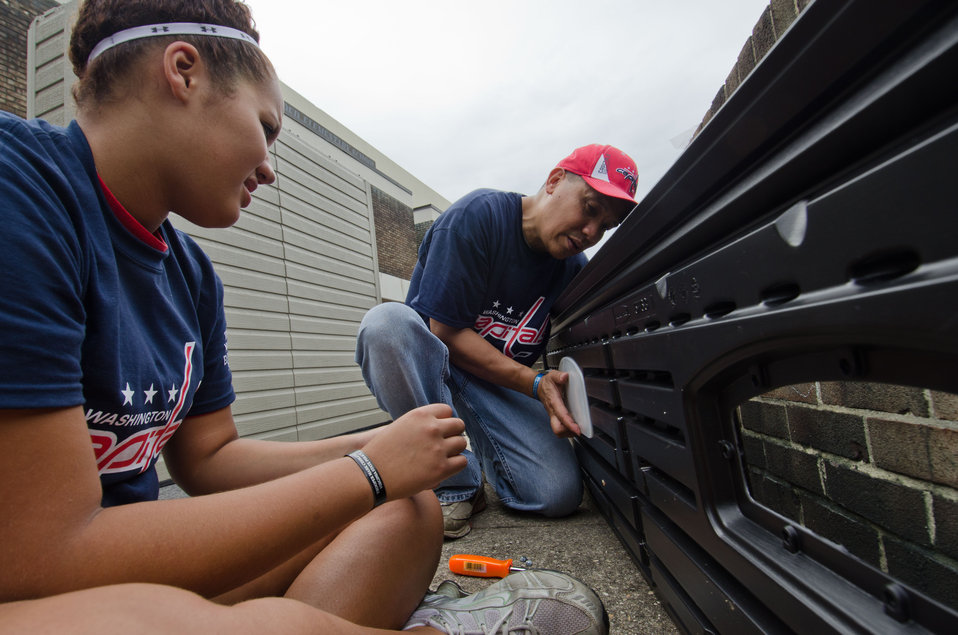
Descendants of U.S. Supreme Court Justice Thurgood Marshall, son, John Marshall and his grand-daughter Brianna attach window panels to a skylight section of a prefabricated garden toolshed, when the U.S. Department of Agriculture (USDA) People’s Garden Executive Master Gardeners, friends, and family, along with Washington Capitals fans volunteer in District of Columbia Public Schools’ (DCPS) Beautification Day, on Saturday, August 25, 2012, at Thurgood Marshall Elementary School, in Washington, D.C. They are one of many multi-generational families volunteering at this school today. Each year people are invited to help “spruce up” public school facilities in preparation for the first day of school. More than 70 volunteers pitched in at this large school facility. The People’s Garden effort involves building and painting raised planter boxes, then preparing the soil mixture so they are “ready to grow.” Washington Capitals Forward Mike Riberio, his family and mascot Slapshot participated in every project underway at Marshall School. From the outside gardens, to inside murals, and robotics worktable construction, the teams made their goals.